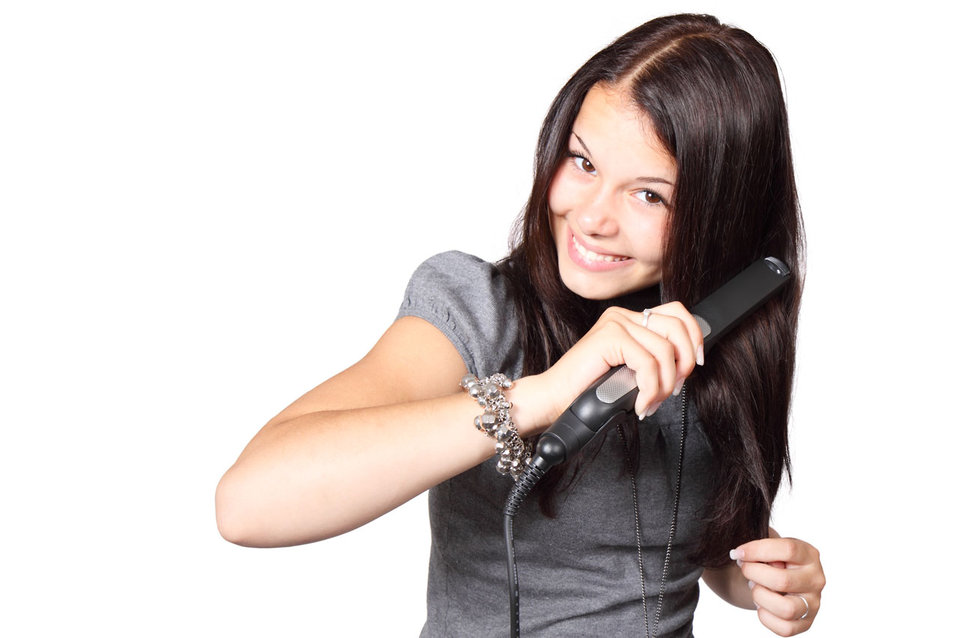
Woman with hair straightener

Young woman using her hair straightener isolated on white background.